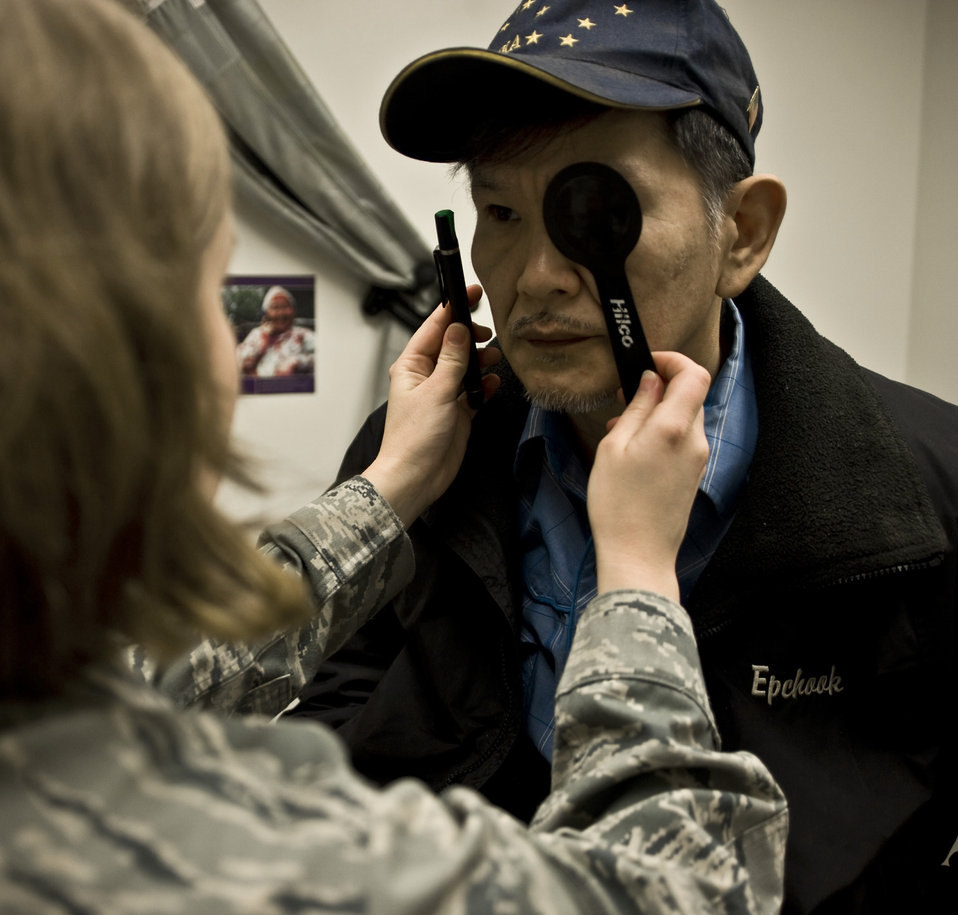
Operation Arctic Care visits Kwethluck village

Senior Airman Samantha Reed, an optometry technician from McConnell Air Force Base, Kan., tests a patient's peripheral vision March 10 at a health clinic in Kwethluk, Alaska. A joint military medical team deployed to Kwethluk, a small village in Western Alaska, in support of Operation Arctic Care 2009. This year's Navy-led mission had teams in 11 villages in Alaska's Yukon-Kuskokwim Delta region providing medical, dental and veterinary support at no cost to Alaskan natives.